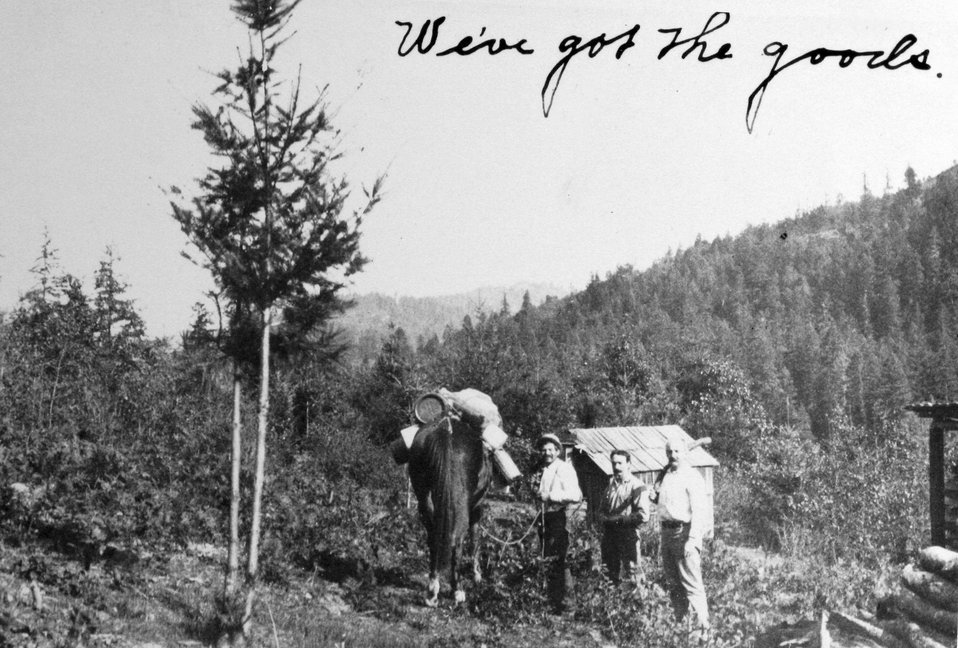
We've got the goods.